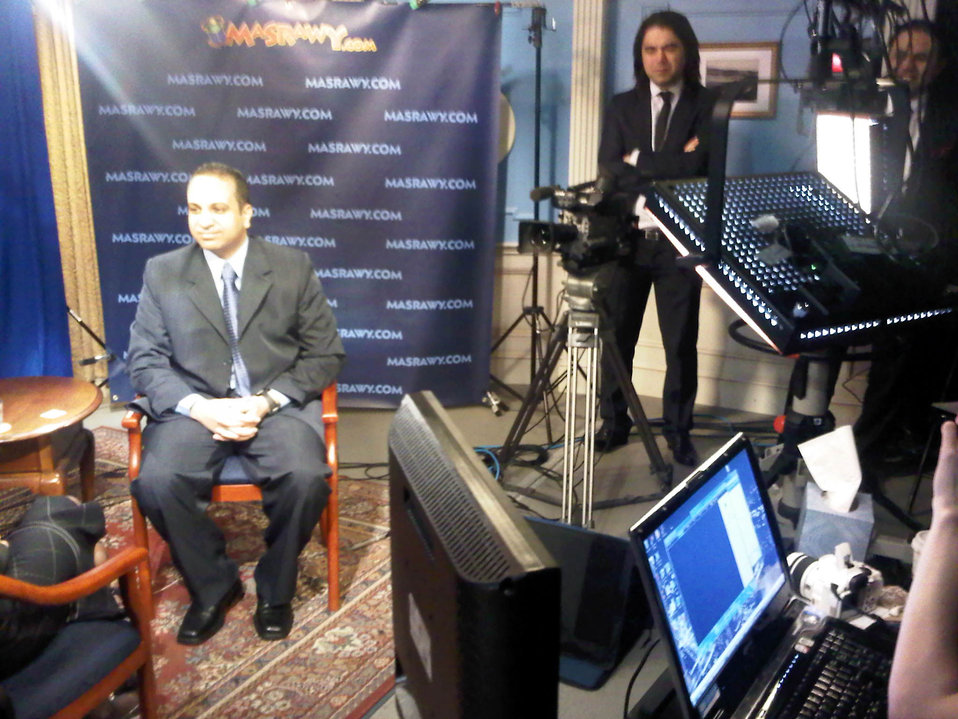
Ahmed Ghanim Conducts an Interview With Secretary Clinton

Ahmed Ghanim conducts an interview with U.S. Secretary of State Hillary Rodham Clinton for the Egyptian online news and information portal Masrawy.com, at the U.S. Department of State in Washington, D.C., on February 23, 2011.